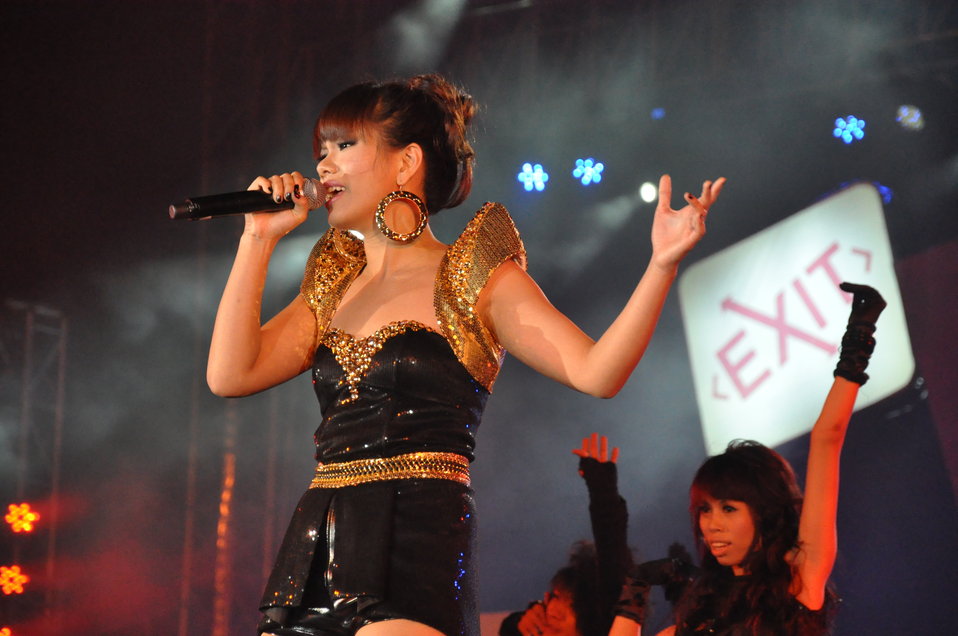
USAID MTV EXIT HCMC Concert

Concert in Ho Chi Minh City against human trafficking, April 17, 2010